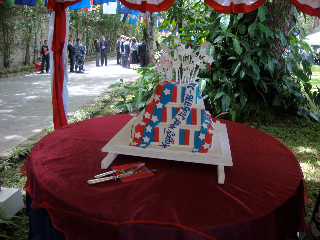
July 4th Celebration at U.S. Embassy in Honduras

The Fourth of July cake is on display at the U.S. Independence Day celebration at the U.S. Ambassador to Honduras’ residence in Tegucigalpa, Honduras, on July 2, 2010.